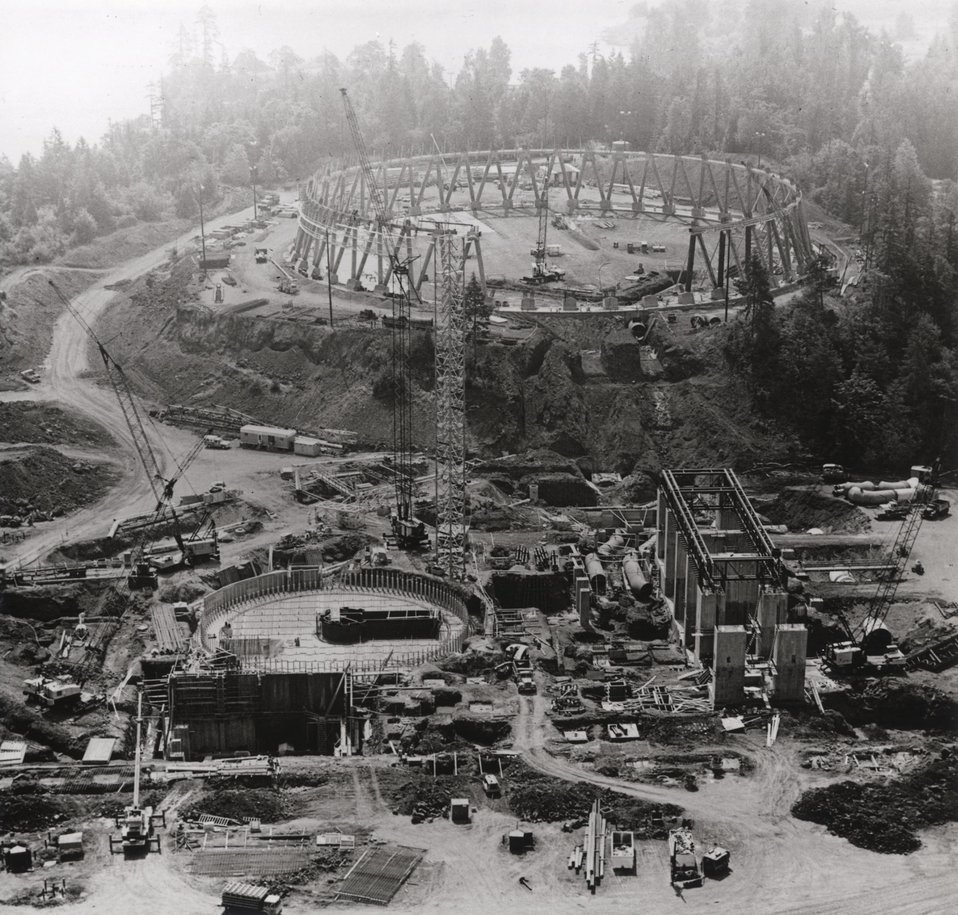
The first 1971 construction permit authorization to be made by the AEC; it was also the first plant to receive approval for continuation of construction pending completion of the broadened environmental impact review required under recently revised AEC regulations implementing the National Environmental Policy Act (NEPA).